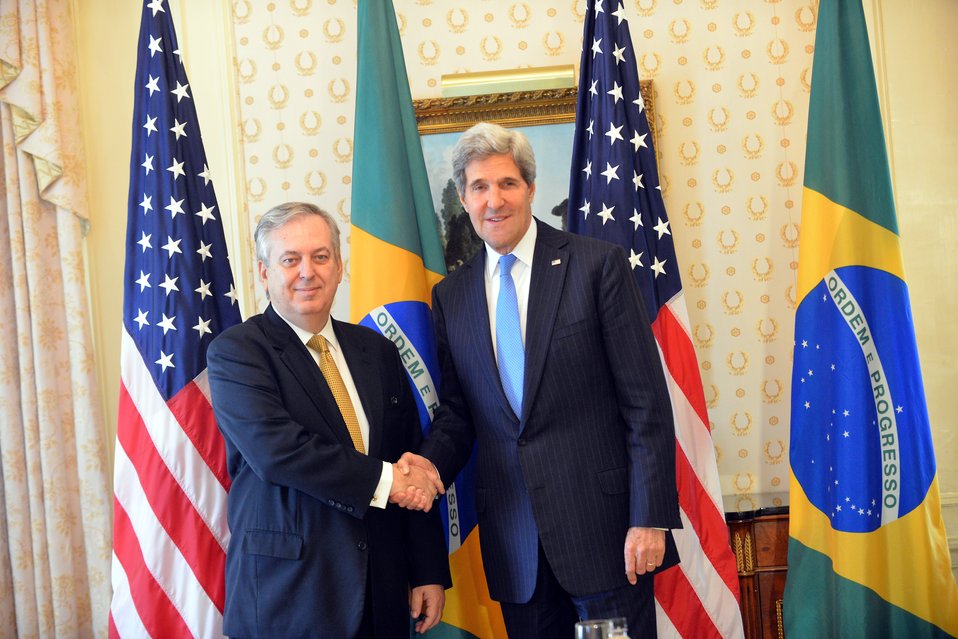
Secretary Kerry Meets With Brazilian Foreign Minister Machado

U.S. Secretary of State John Kerry meets with Brazilian Foreign Minister Figueiredo Machado in New York City on September 27, 2013.